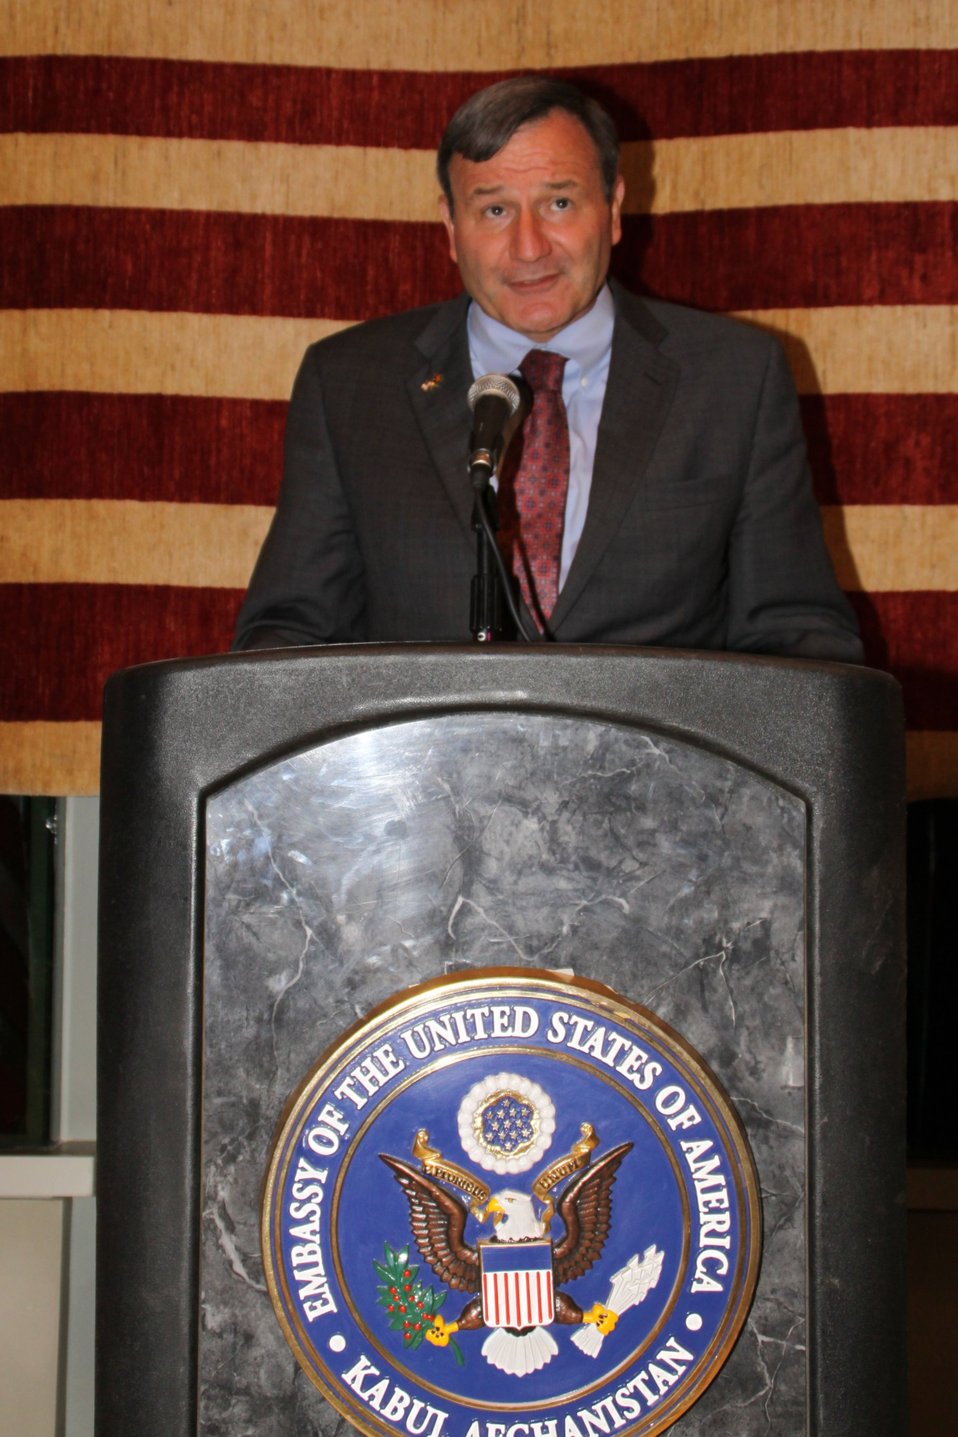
US Embassy Town Hall July 21, 2010